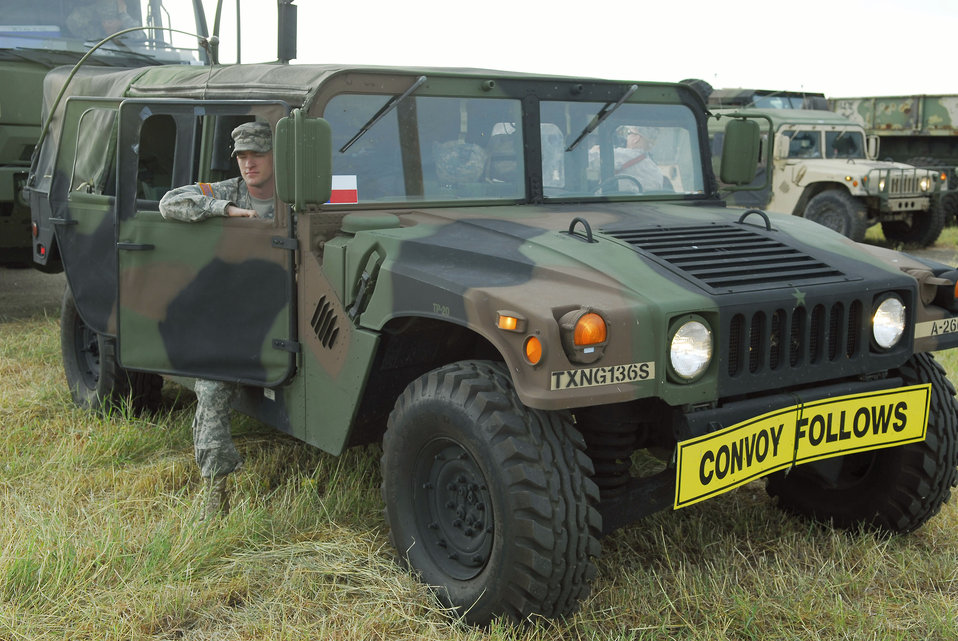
Convoy: Help is on the way!

Military forces and representatives of agencies from throughout Texas and the U.S. gathered in San Antonio and then convoyed east. More than 500 vehicles and 1,000 people headed to various locations in Southeast Texas to begin search and rescue and recovery efforts in the aftermath of Hurricane Ike.